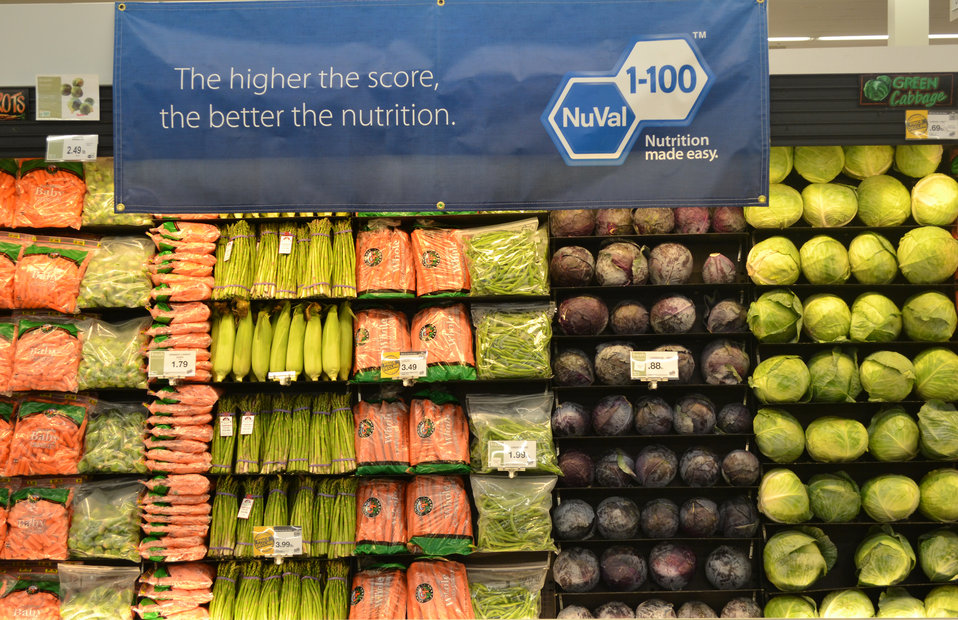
Vegetables at the Hy-Vee Supermarket for Agriculture Secretary Tom Vilsack visit in Sioux Falls, South Dakota to discuss USDA efforts to promote fruit and vegetable consumption, improve childhood nutrition and prevent obesity to raise a healthier generation of Americans. He announced the results of a pilot program aimed at increasing fruit and vegetable consumption in America’s poorest schools.